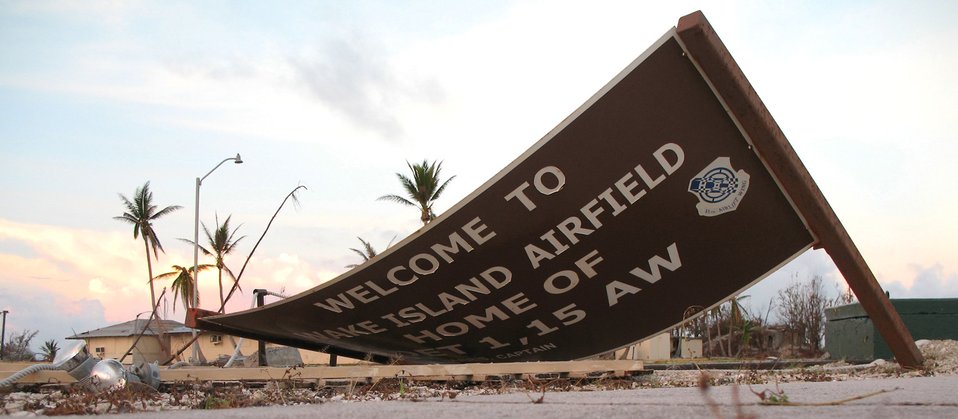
Andersen team prepares Wake Island for aircraft

Damage at the Wake Island airfield, where Super Typhoon Ioke brought 150 mph winds and 190 mph gusts Aug 31. A damage assessment team arrived from Hickam Air Force Base, Hawaii, Sept. 13 to estimate the cost of the damage.